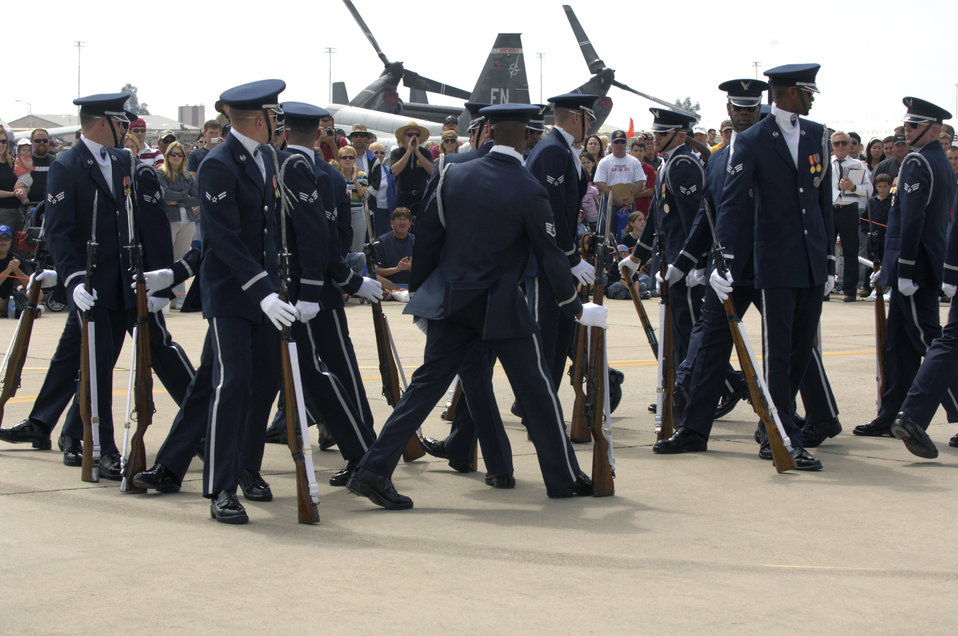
Showcasing the Air Force mission

The United States Air Force Honor Guard Drill Team performs March 24 during the Luke Air Force Base, Ariz., air show. The drill team is the traveling component of the Air Force Honor Guard and tours Air Force bases worldwide showcasing the precision of today's Air Force to recruit, retain and inspire Airmen for the Air Force mission.